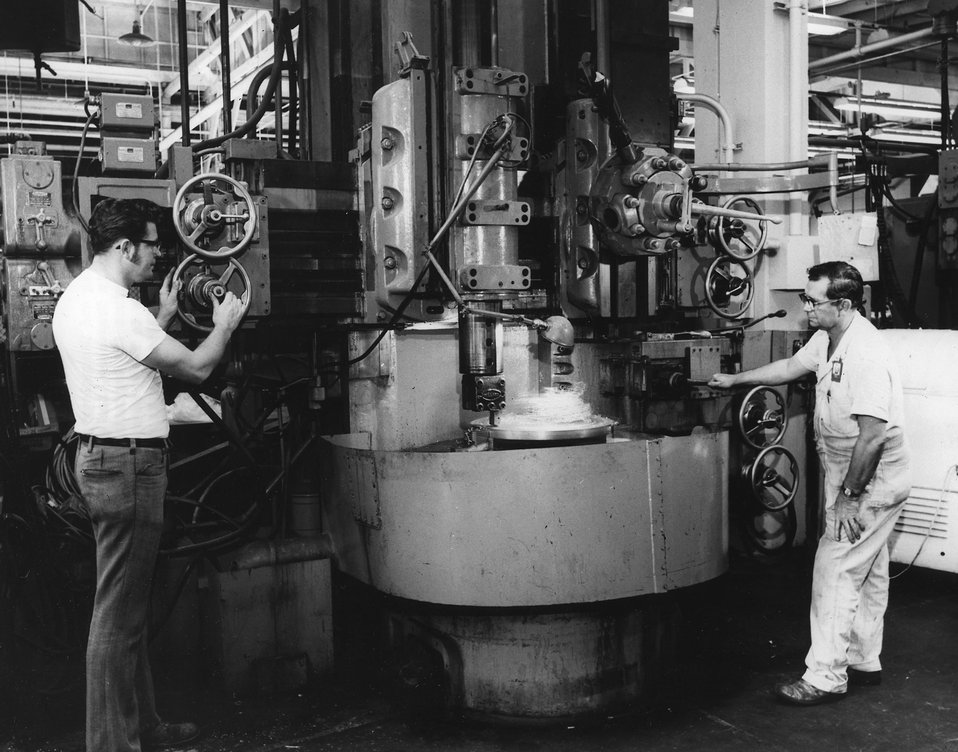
The Training and Technology programs at the Oak Ridge Y-12 Plant in Tennessee, has graduated approximately 2,000 students since its beginning in 1966. c. 1972